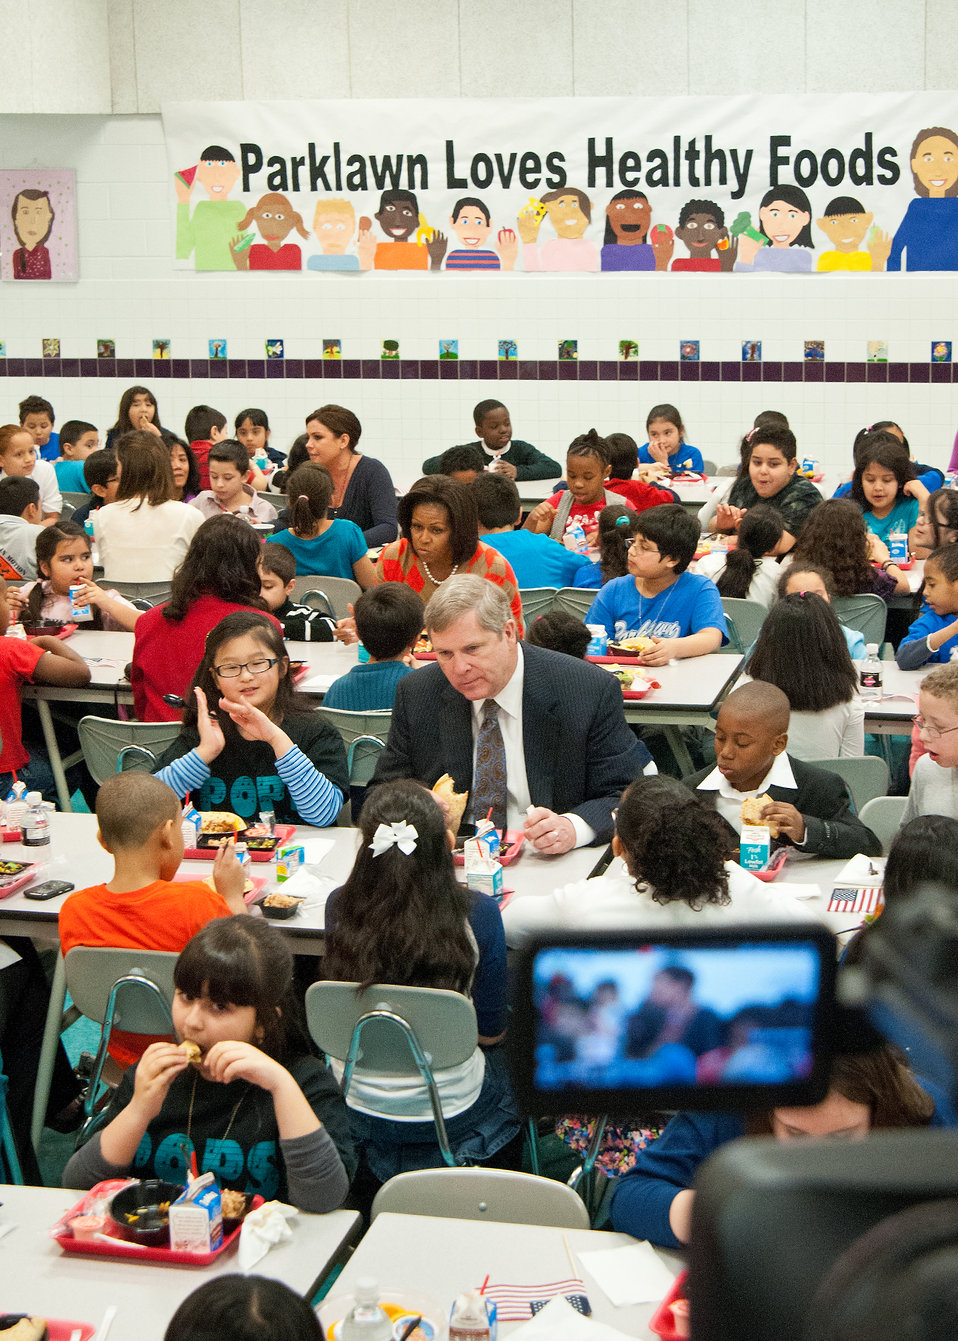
Agriculture Secretary Tom Vilsack joined First Lady Michelle Obama and celebrity cook Rachel Ray at Parklawn Elementary School in Alexandria, Virginia, on Wednesday, January 25, 2012 to speak with faculty and parents about the United States Department of Agriculture’s new and improved nutrition standards for school lunches. An important accomplishment of the Healthy, Hunger-Free Kids Act that President Obama signed into law last year, USDA is making the first major changes in school meals in over 15 years. The new standards encourage fruits and vegetables every day of the week, increasing offerings of whole grain-rich foods, offering only fat-free or low-fat milk and making sure kids are getting proper portion sizes.